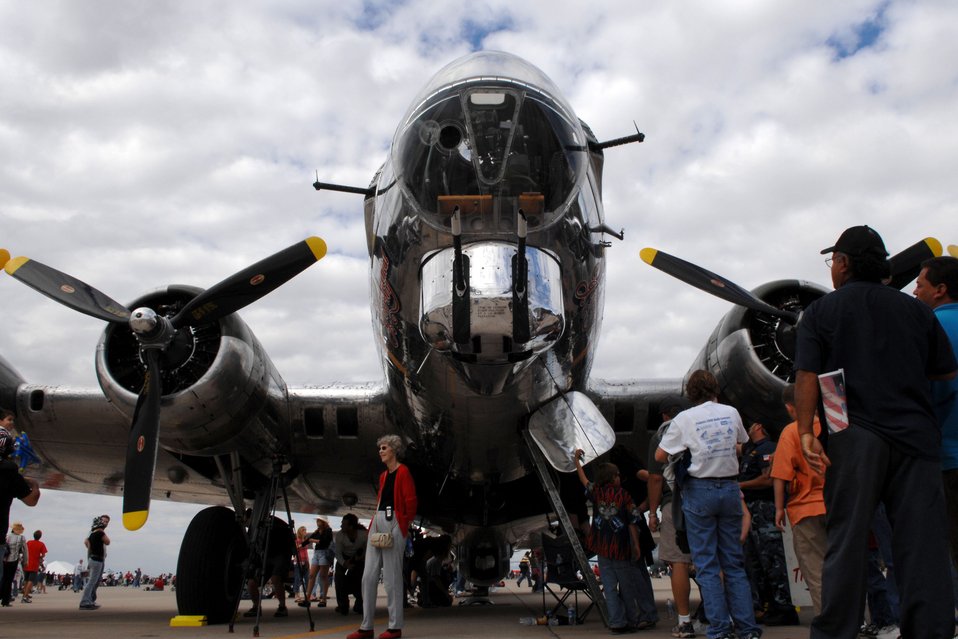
Air Force Week

Spectators check out a 1944 B-17 during